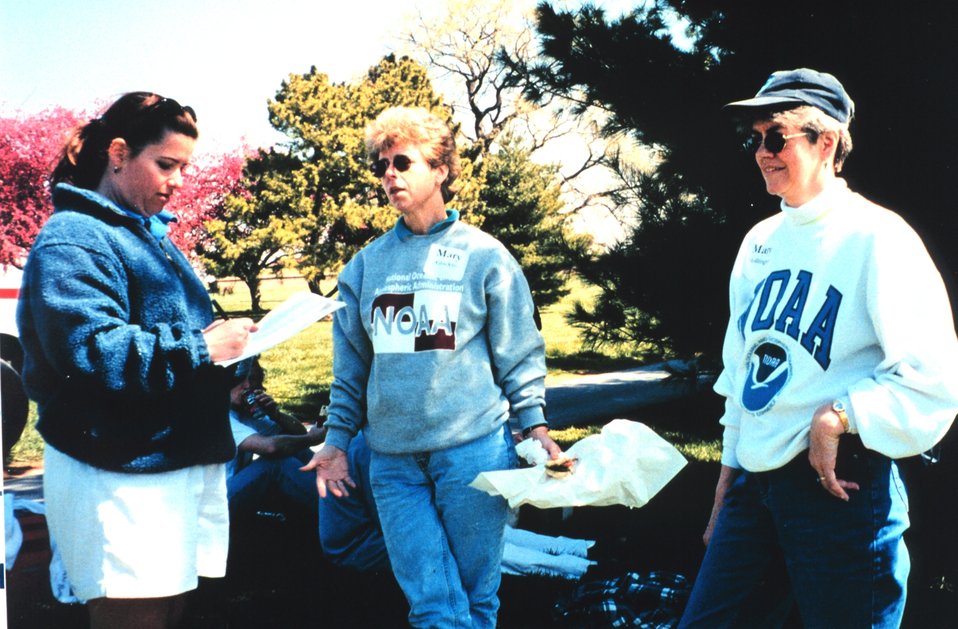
Volunteers helping clean up the wetlands and waterfront area around Fort McHenry in Baltimore Harbor. Local NOAA personnel turned out in force for this event including Mary Hollinger, on right in this photo.